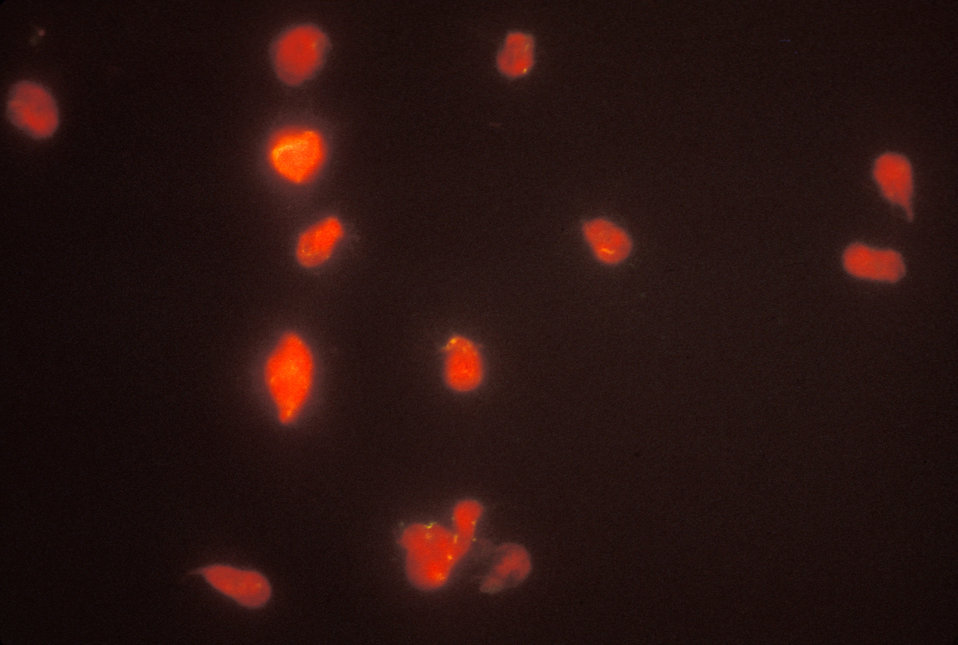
A photomicrograph of a positive indirect immunofluorescence test checking for the presence of Giardia lamblia.